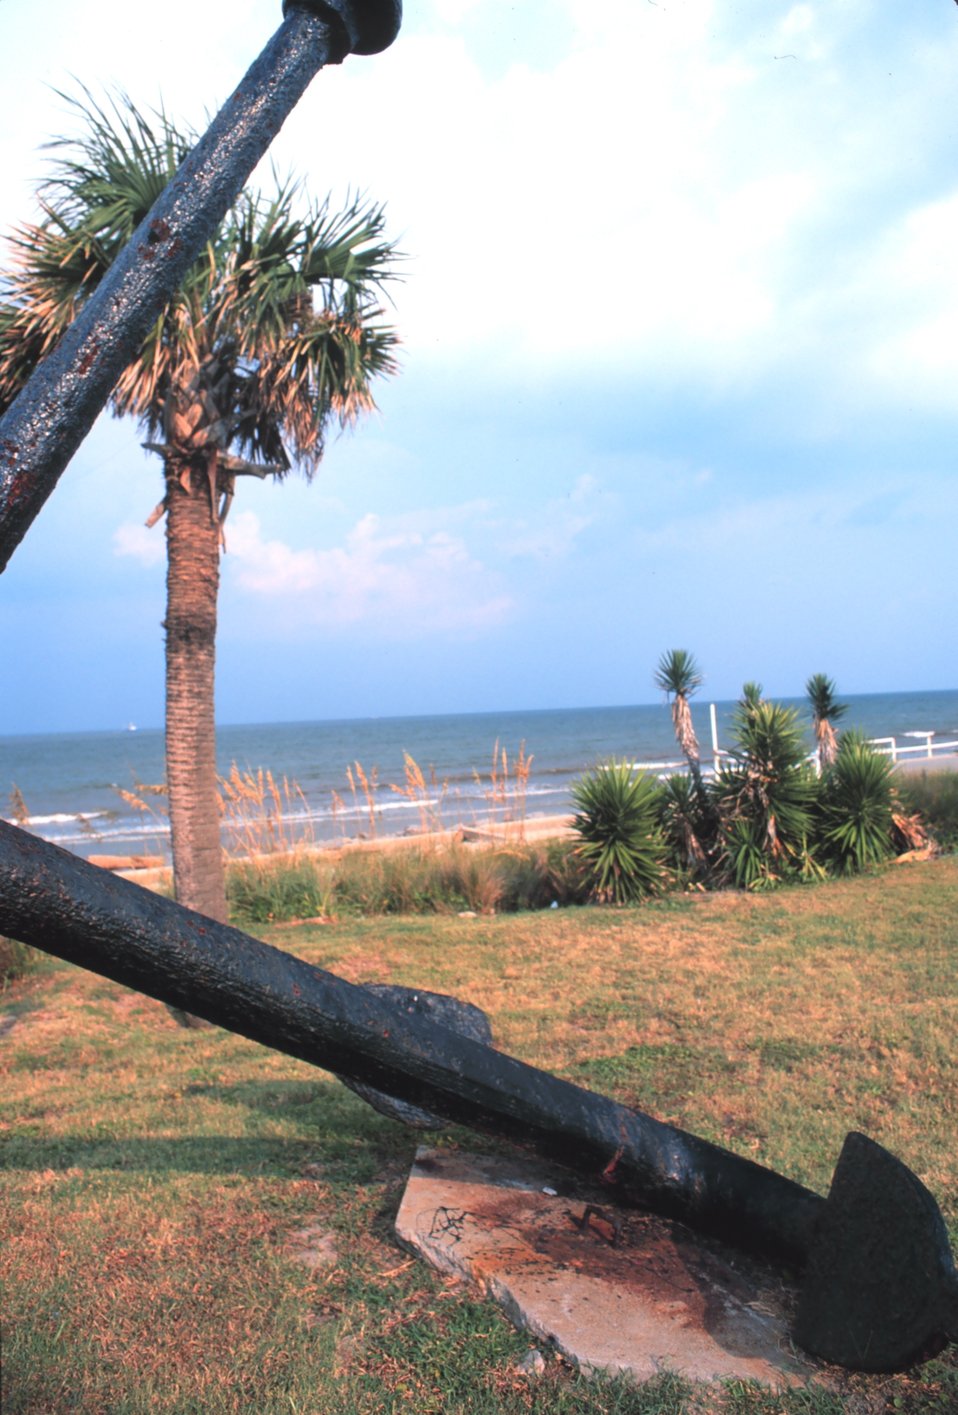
Palmetto trees (Sabal palmetto) as seen through an old anchor